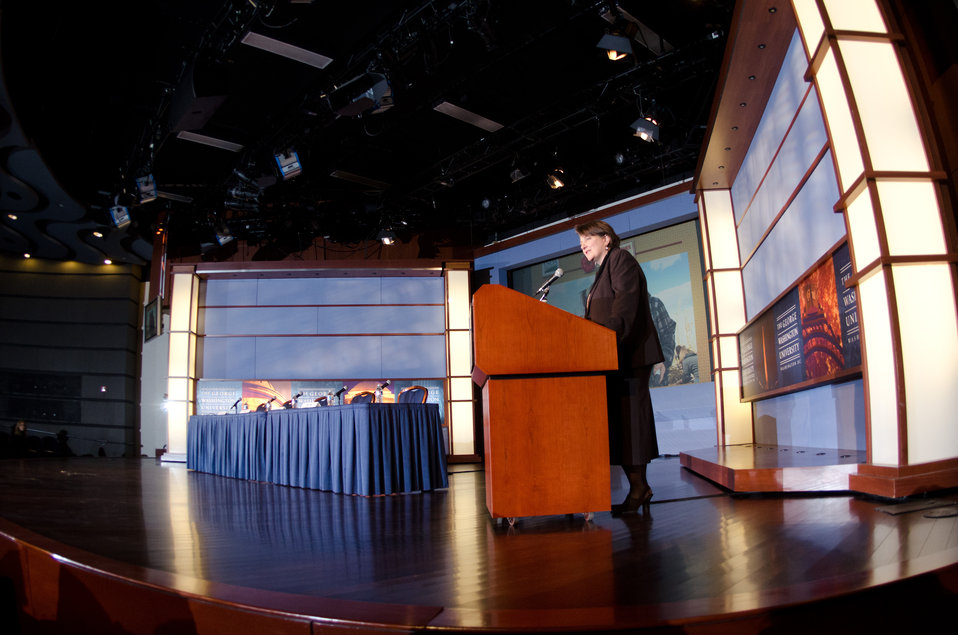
Agriculture Deputy Secretary Dr. Kathleen Merrigan keynote speaker 'Shaping the Farm Bill for a Sustainable Future.' Forum at The Trachtenberg School of Public Policy and Public Administration, George Washington University in Washington, D.C., on Thursday, March 1, 2012.